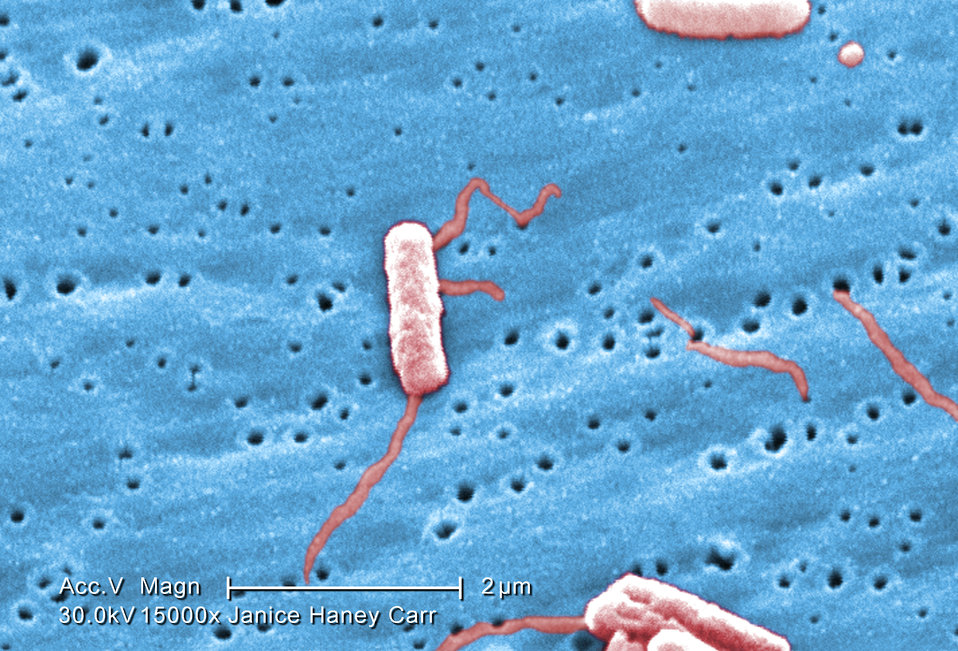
Under a very high magnification of 15000X, this colorized scanning electron micrograph (SEM) depicted a number of Gram-negative Legionella pneumophila bacteria. Please see PHIL 11092 through 11152 for additional SEMs of these organisms, specifically PHIL 11141 for a black and white version of this image. Of particular importance, is the presence of polar flagella, and pili, or long streamers, which due to their fragile nature, in some of these views seem to be dissociated from any of the bacteria.